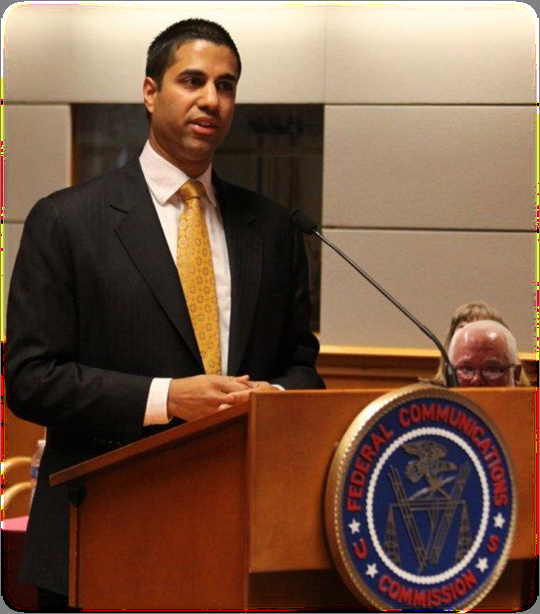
Commissioner Aji Pai, FCC